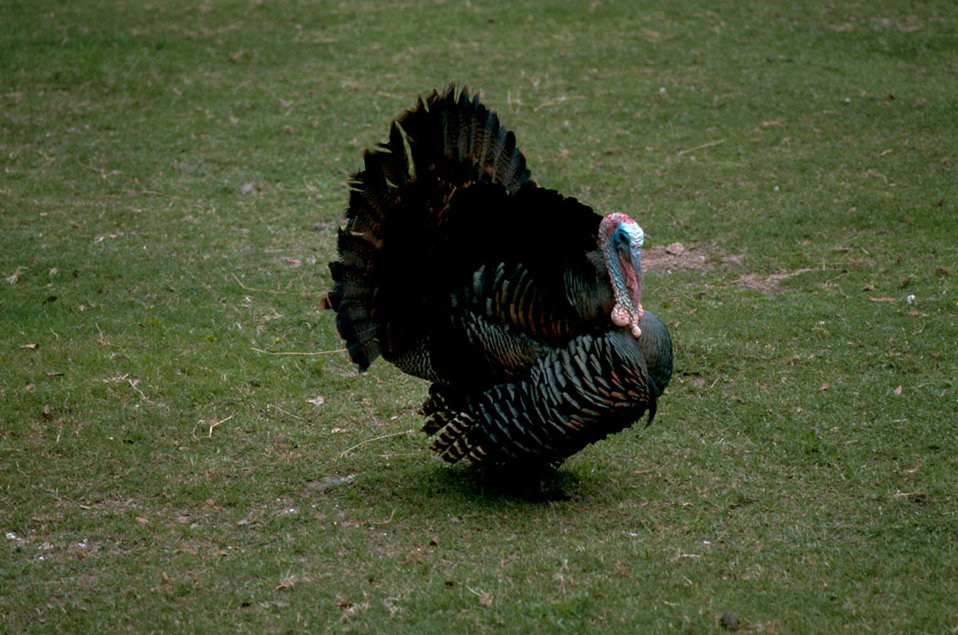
Eastern Wild Turkey.